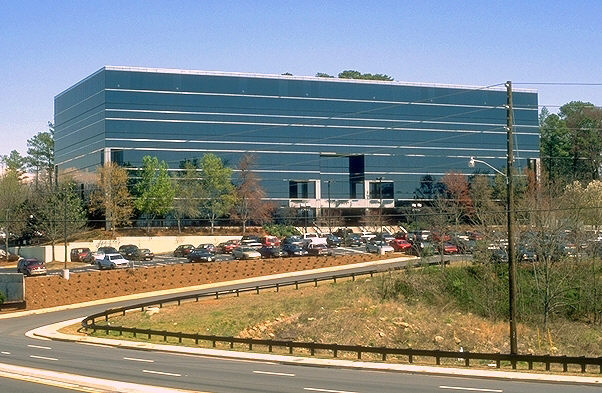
Rhodes Building, Koger Center.